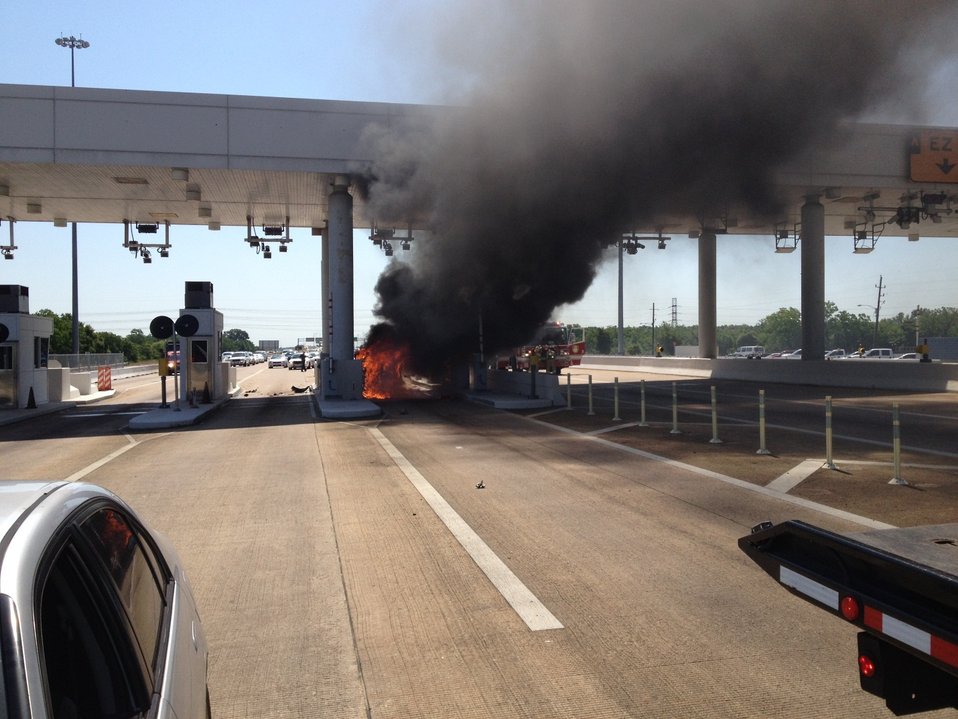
Burning car rescue

Nancy Decker’s vehicle is completely engulfed in flames moments after being evacuated from the car by Staff Sgt. Mitchell Corbin on June 1, 2012. Corbin was traveling on the Sam Houston Parkway when he heard a woman screaming someone was in the burning car. Corbin is an aerospace ground equipment technician with the Texas Air National Guard’s 147th Reconnaissance Wing.